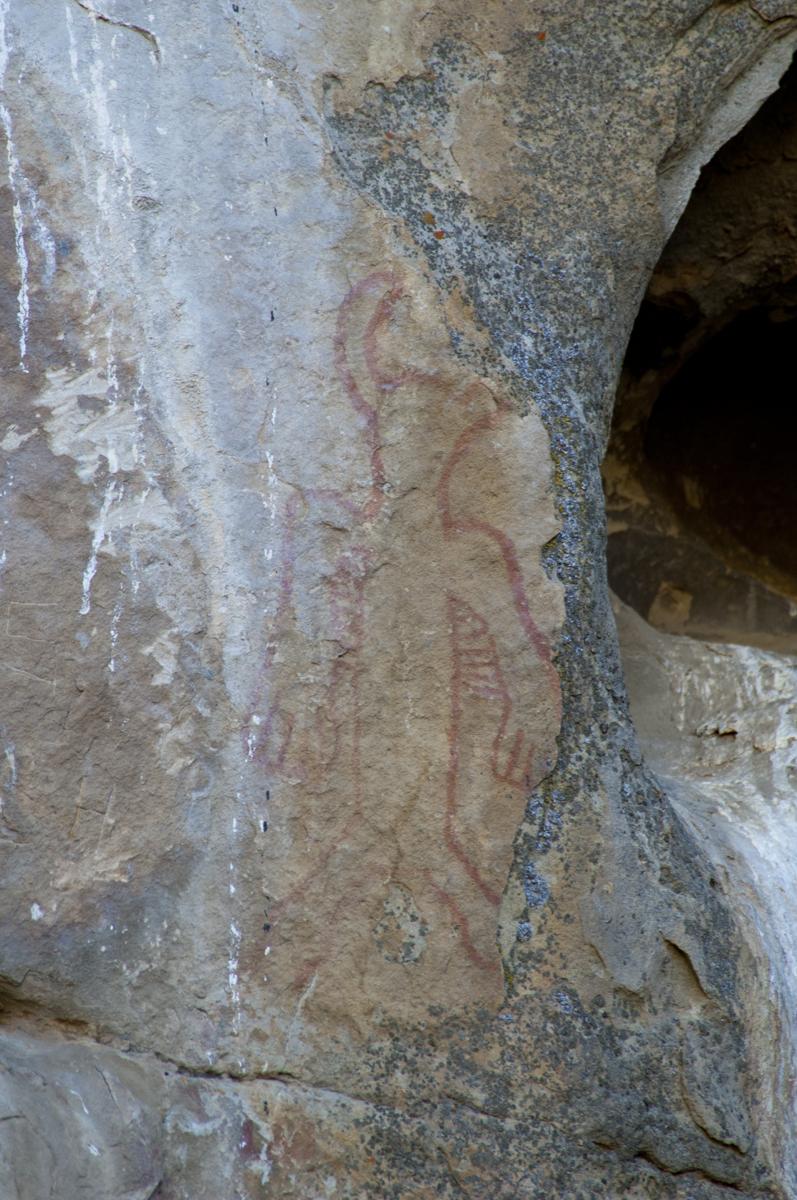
Pictograph at Painted Rock, Carrizo Plain 6